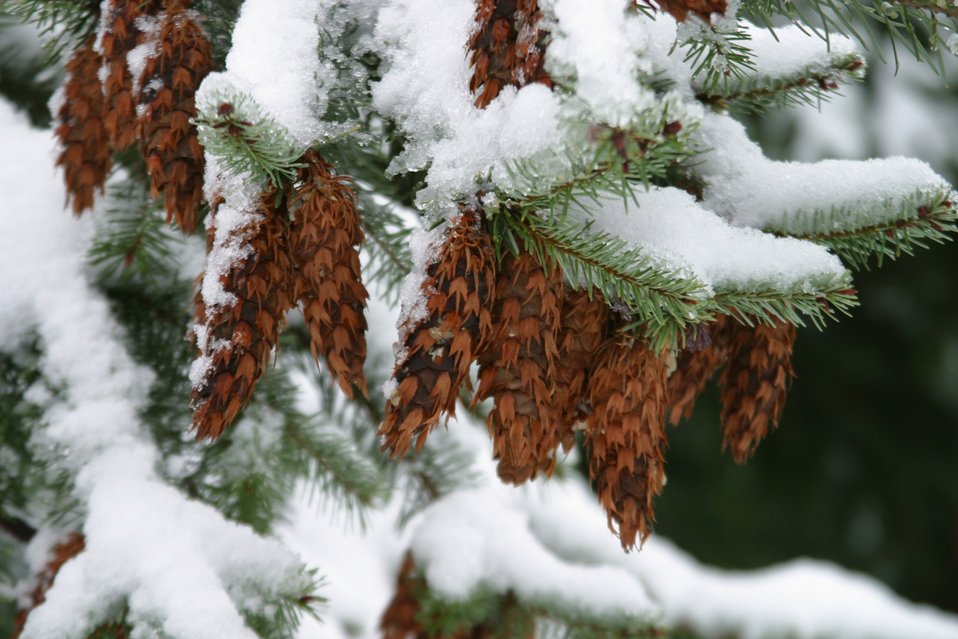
Snow and ice on Douglas Fir Bows and cones during the storm of January 2004.